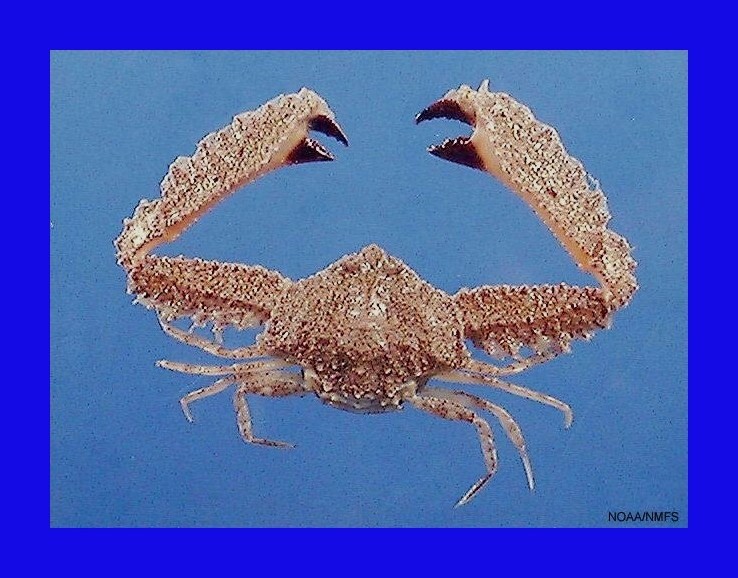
Bladetooth elbow crab ( Platylambrus granulatus )